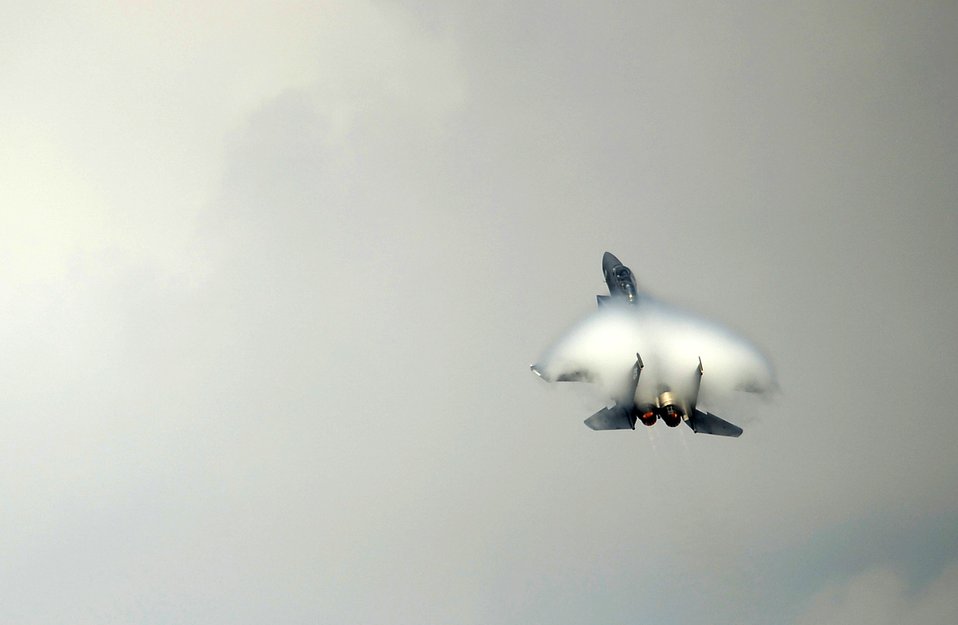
The Eagle soars

An F-15E Strike Eagle pilot performs maneuvers April 9, 2011, during the Charleston Air Expo at Joint Base Charleston S.C.